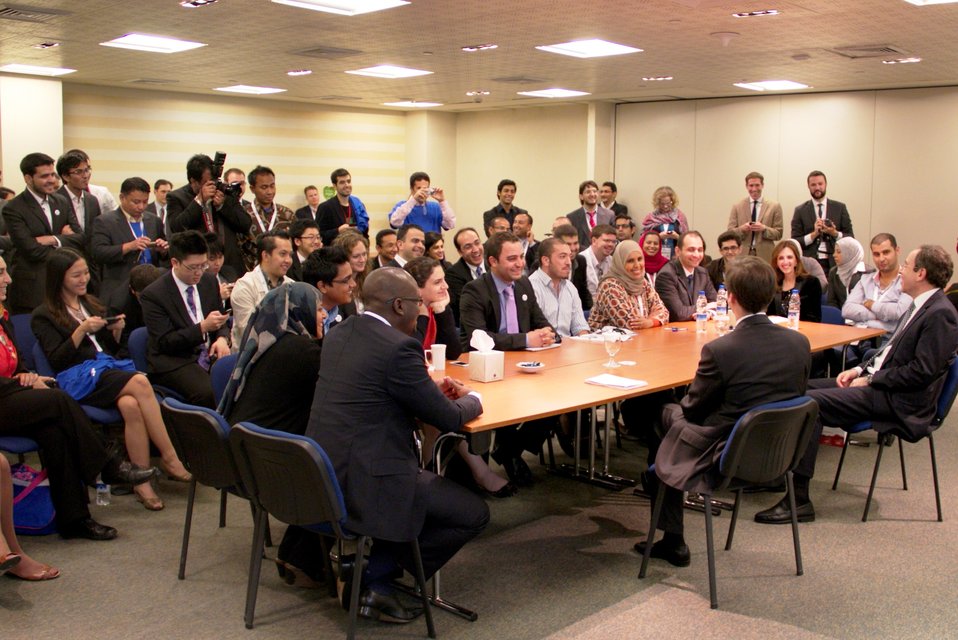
Deputy Secretary Nides With Young Entrepreneurs

Deputy Secretary of State Thomas Nides meets with young entrepreneurs from the State Department-sponsored Global Innovation through Science and Technology (GIST) initiative on the sidelines of the Global Entrepreneurship Summit in Dubai, United Arab Emirates, December 12, 2012.